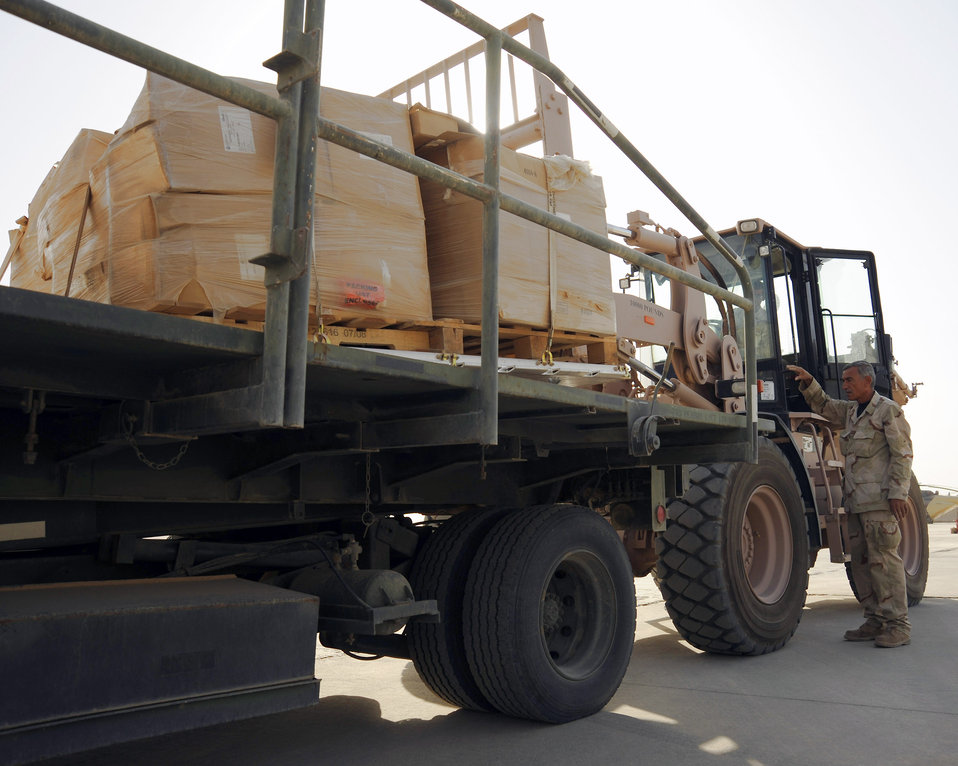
Iraqi relief

An Iraq air force loadmaster guides a pallet onto a K-loader Sept. 22 at an air base in Iraq. The supplies are to be donated to internally displaced families in Najaf, Iraq. This is the first Iraqi air force supported humanitarian airlift to Najaf.